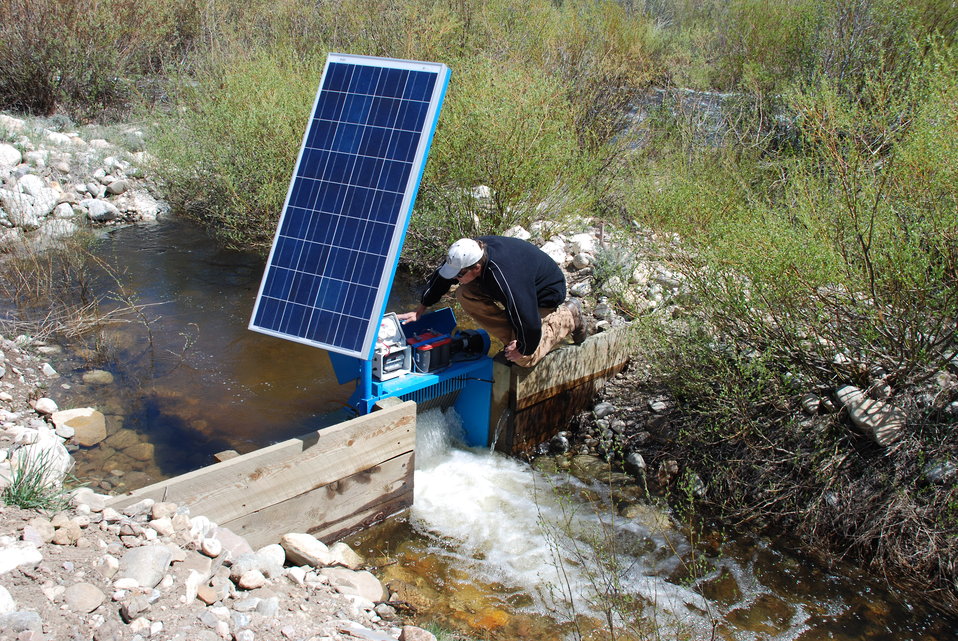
Regional Leadership Visit to Montana 2014